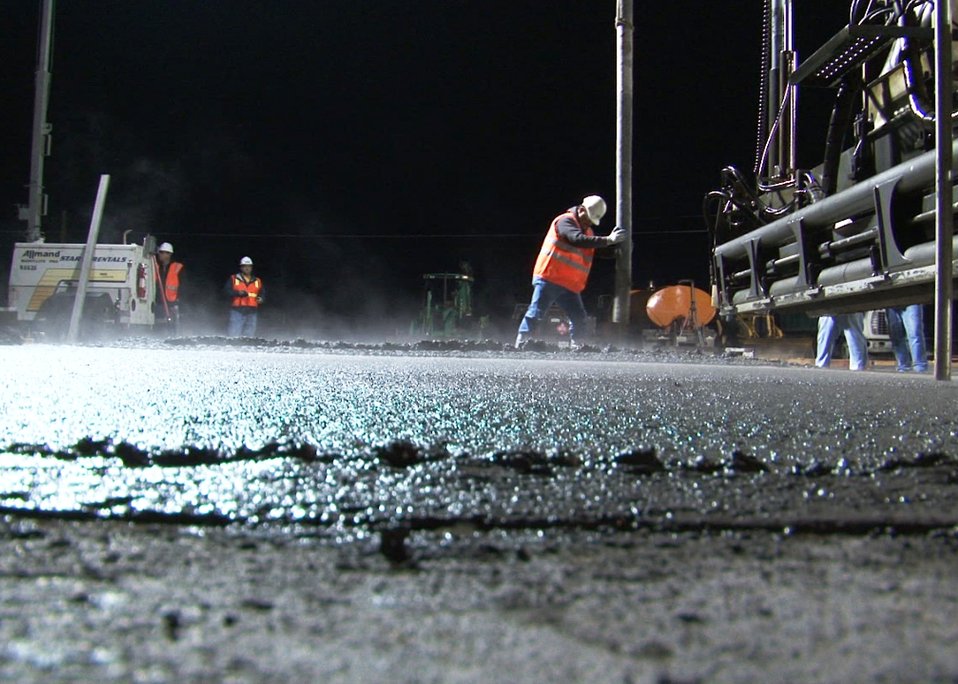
DX GW Treatment 3